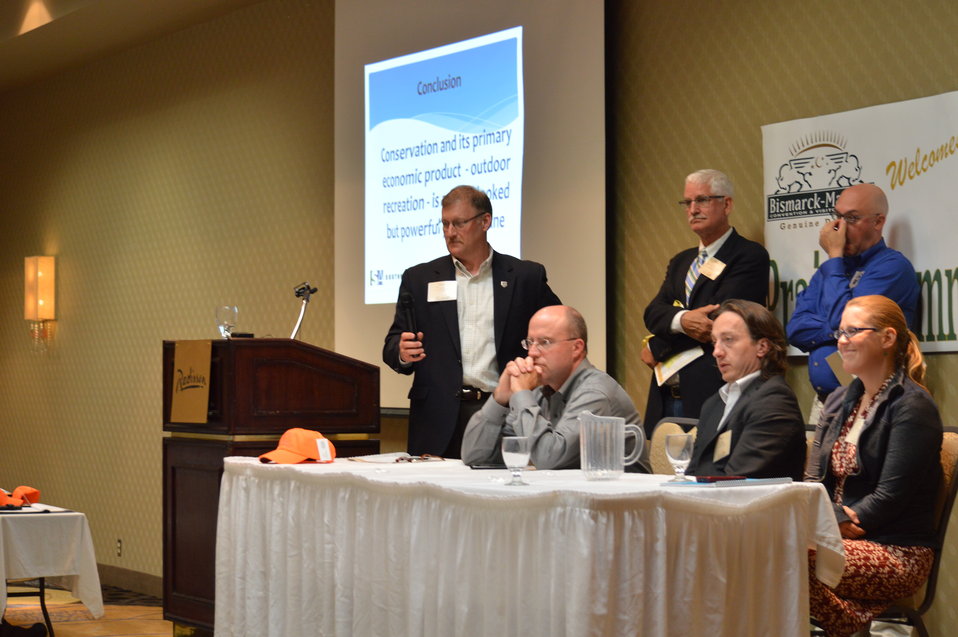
Panel at the Prairie Summit

Through the efforts of Ducks Unlimited and its partners, a Prairie Summit meeting was held in June 2013 in Bismarck, North Dakota, bringing key stakeholders to the table to identify and begin to address the immediate needs of the overall effort to conserve wetlands and grasslands, as well as bring media attention to the issues at hand and the urgency of the situation.